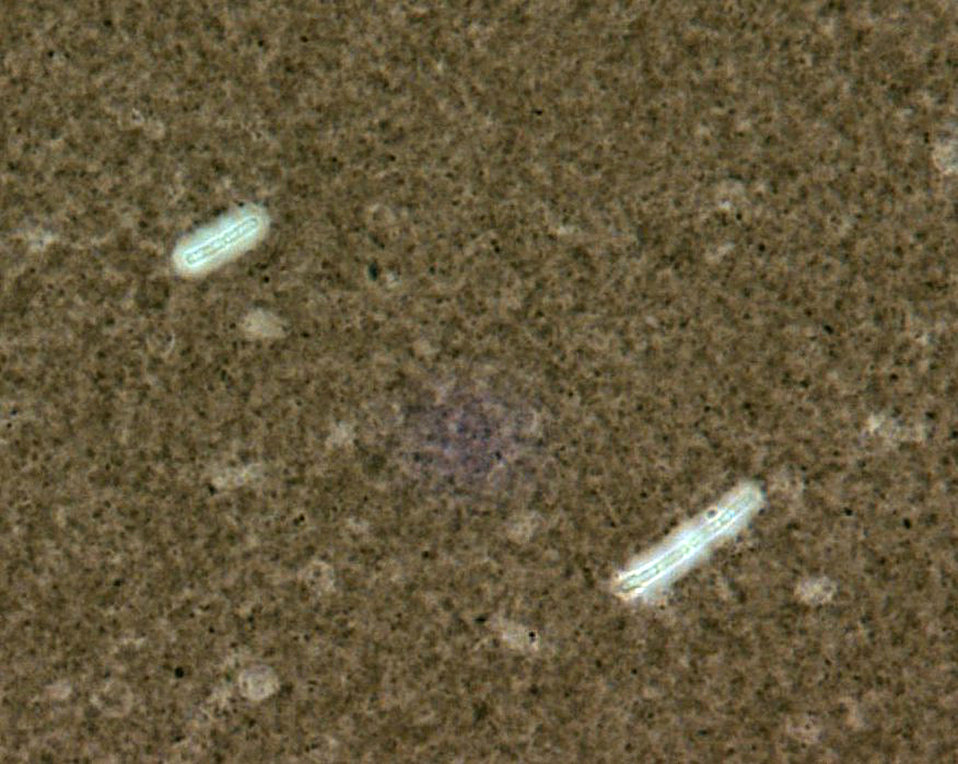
Bacillus anthracis Indian Ink capsule stain.